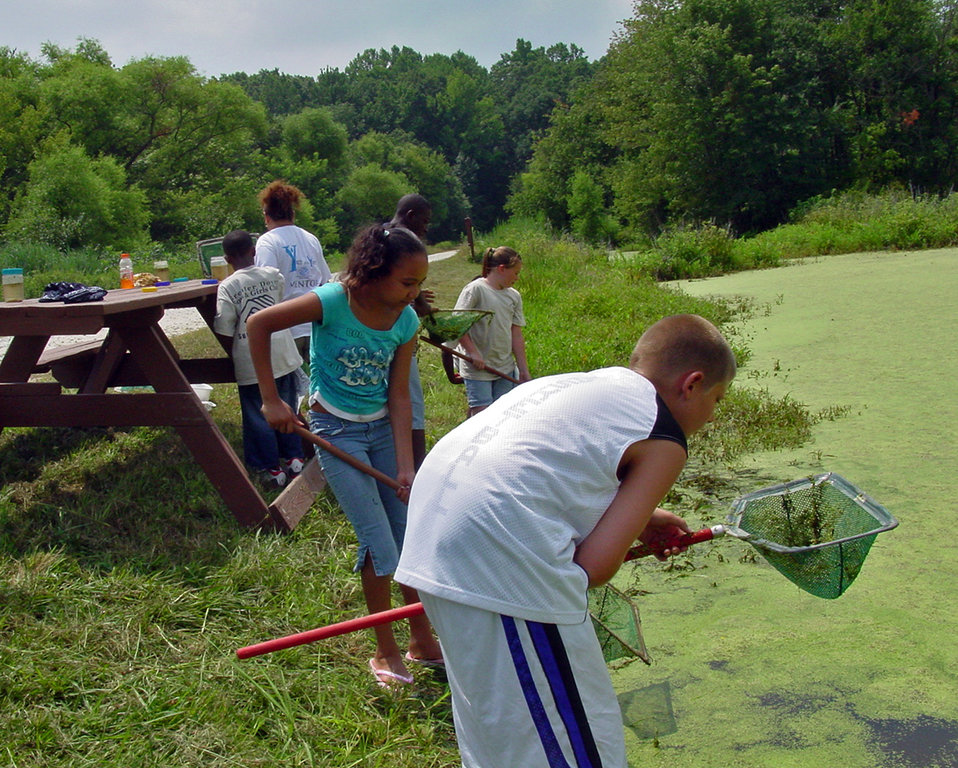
Environmental education

Bombay Hook National Wildlife Refuge, DE.